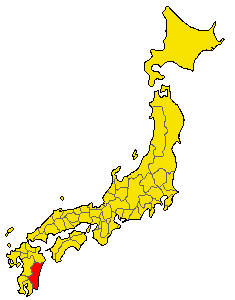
Japan prov map hyuga